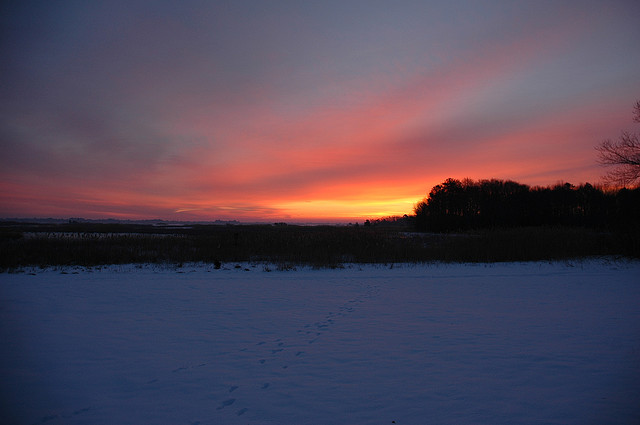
Prime Hook sunrise

Prime Hook National Wildlife Refuge